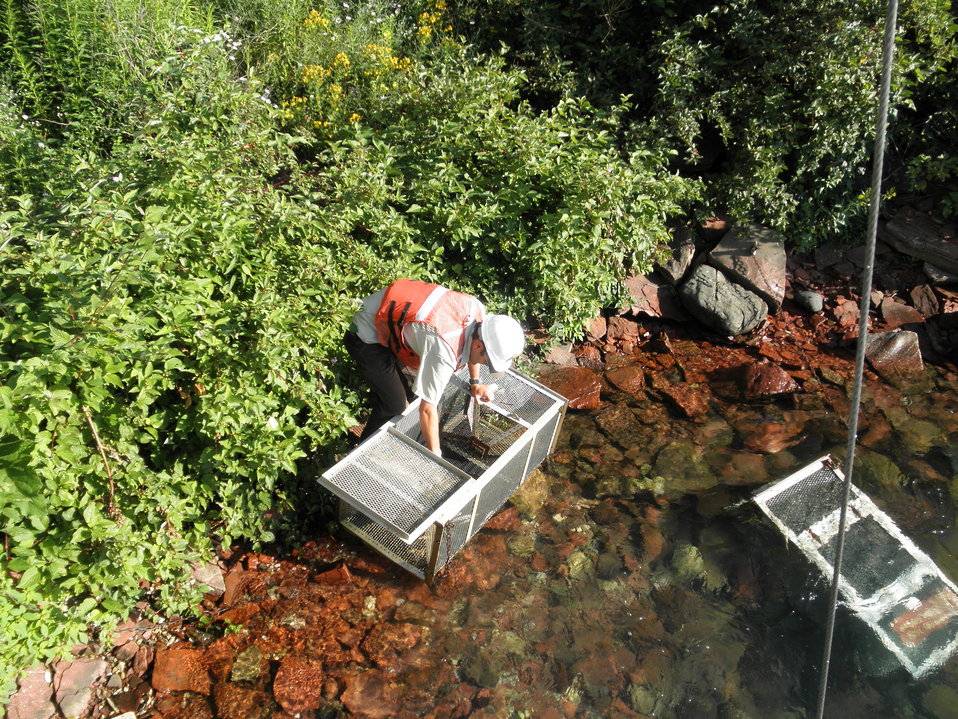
Service Employee Checking a Sea Lamprey Trap on the St. Marys River, Which Borders Michigan and Ontario, Canada.